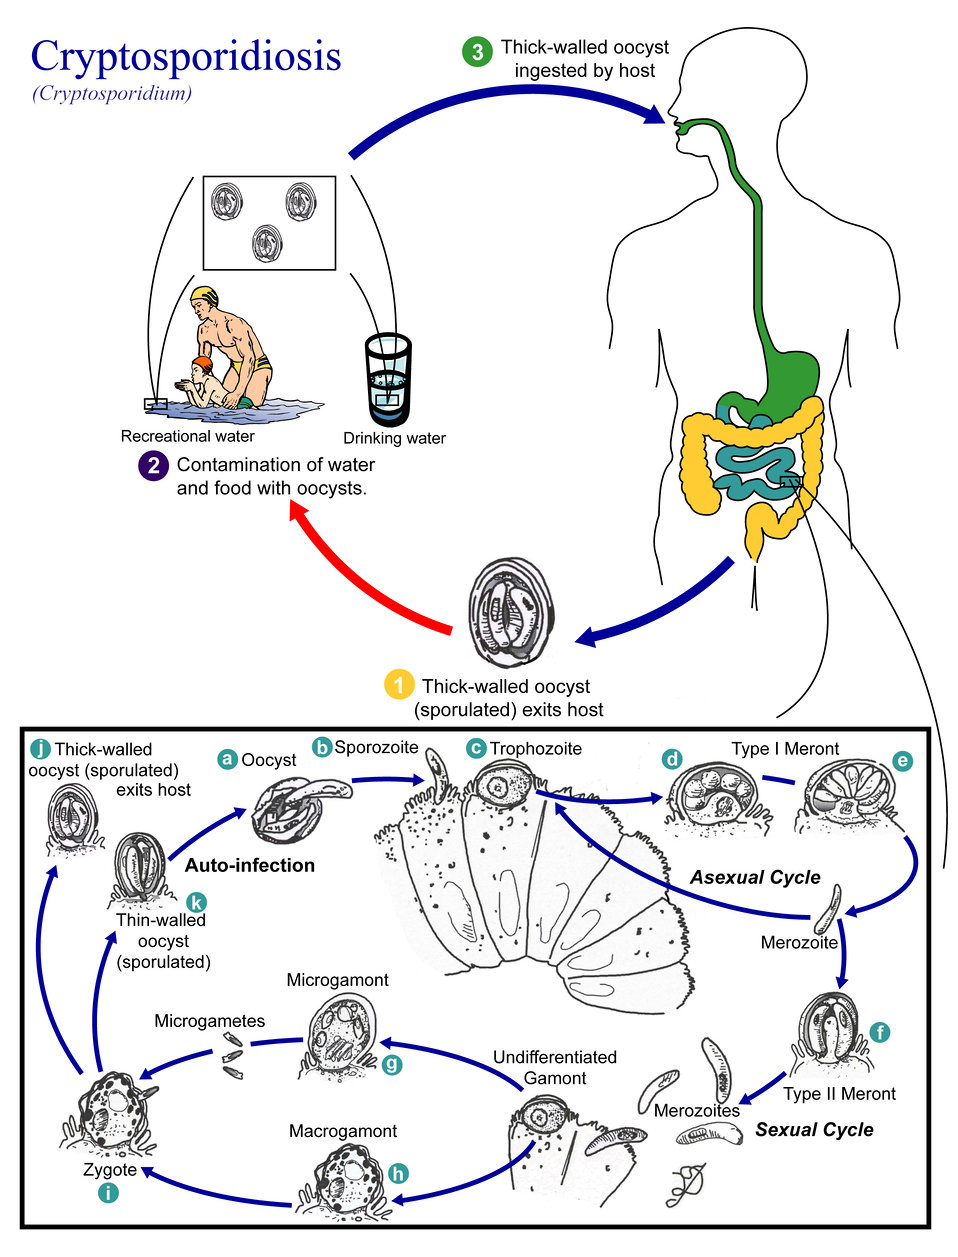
This illustration depicts the life cycle of different species of Cryptosporidium, the causal agents of Cryptosporidiosis.